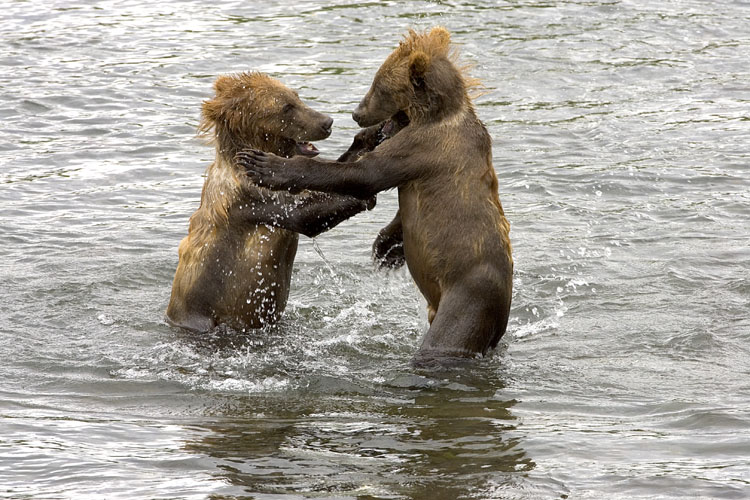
KOD Hildebrand (18)

Kodiak National Wildlife Refuge- Wildlife